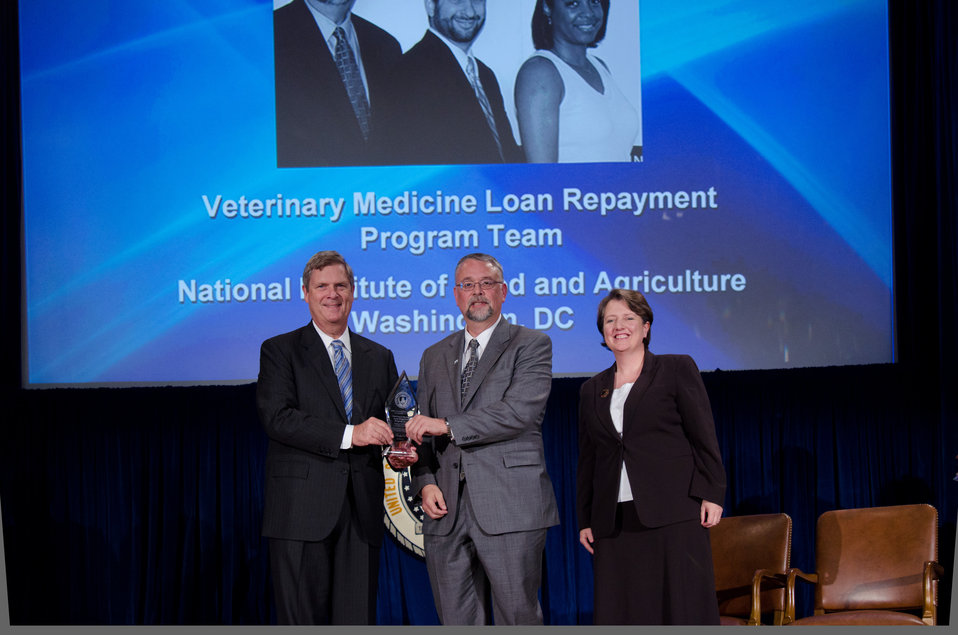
Agriculture Secretary Tom Vilsack (l) and Deputy Secretary Kathleen Merrigan (r), presents the Assisting, Rural Communities To Create Prosperity So They are Self-Sustaining, Repopulating, and Economically Thriving Award to Veterinary Medicine Loan Repayment Program Team, National Institute of Food and Agriculture, Washington, DC. Gary B. Sherman, Group Leader. For reducing the shortage of food supply veterinarians in rural areas with critical need by developing and implementing the Veterinary Medicine Loan Repayment Program. On Wednesday, September 14, 2011 in the Jefferson Auditorium at the US Department of Agriculture in Washington, DC.